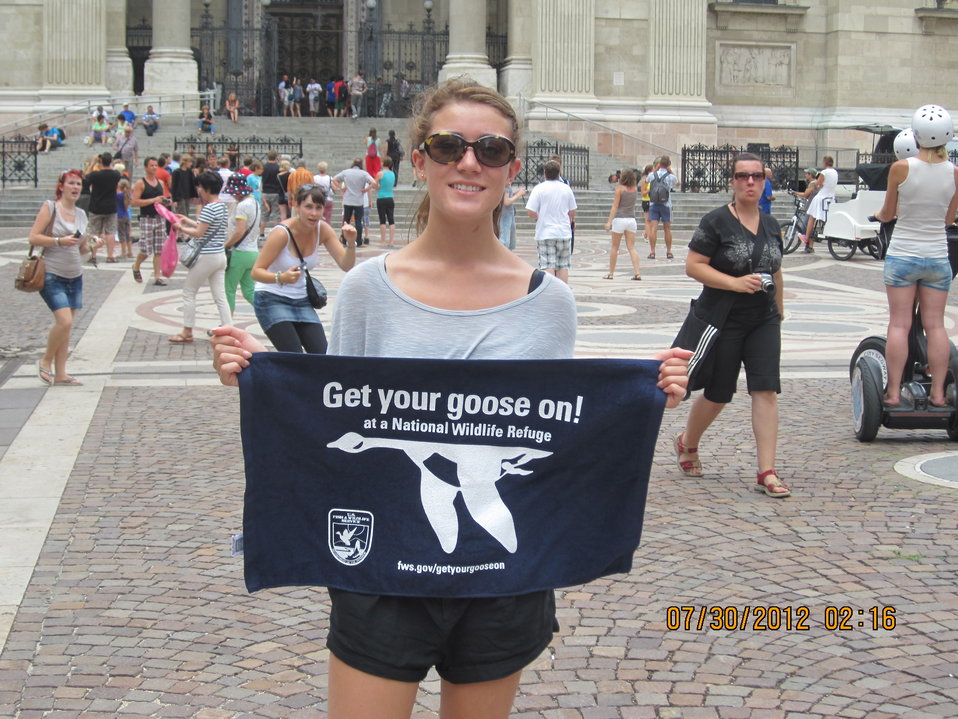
Get Your Goose On! - in France